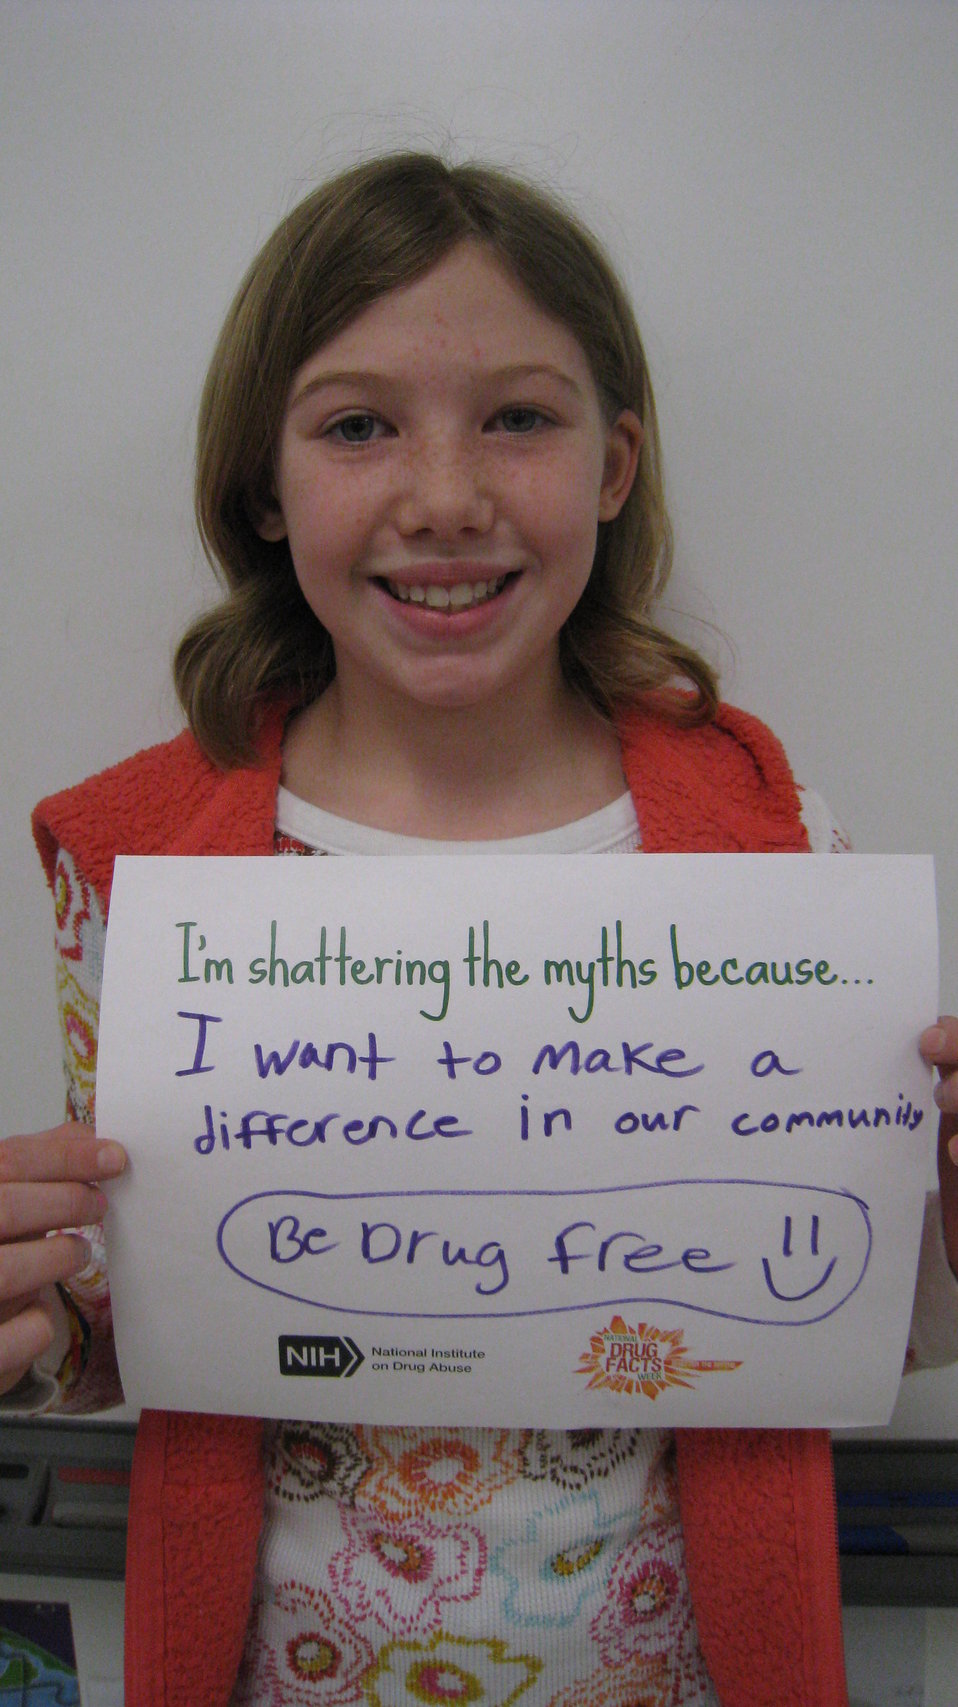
I'm Shattering the Myths Because...

Teenagers from the Van Buren County SAFE Coalition's, Youth Leadership Council (YLC) in Keosauqua, Iowa participate in various events during National Drug Facts Week, 2014.